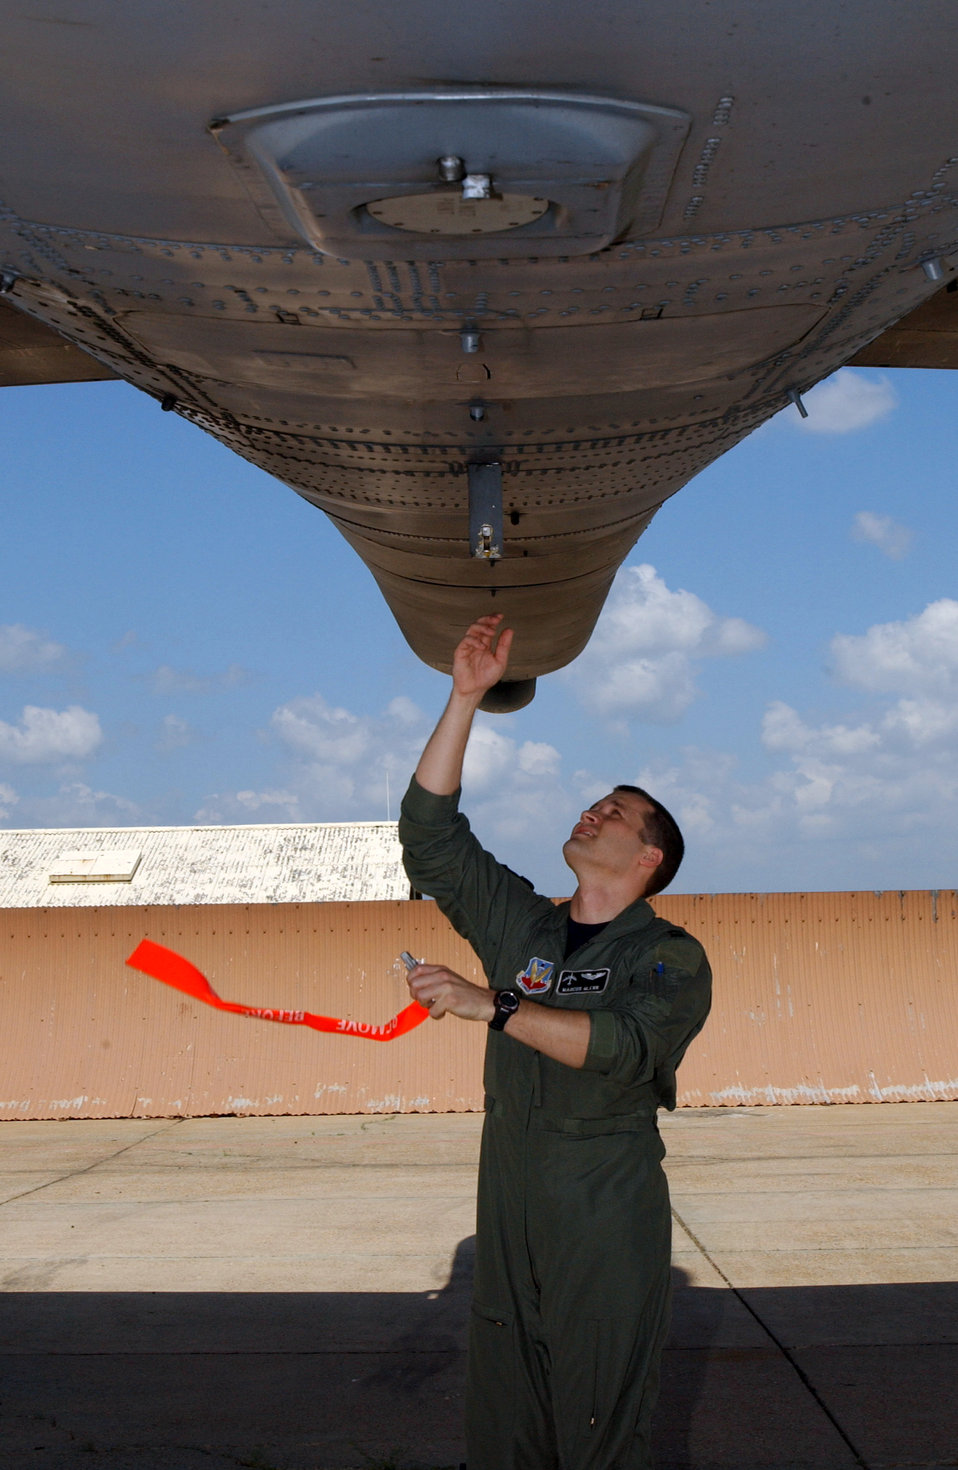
Mission ready

BARKSDALE AIR FORCE BASE, La. -- Capt. Marcus Glenn removes a safety pin from the flare door of a B-52 Stratofortress before a training mission from here May 20. Captain Glenn is a B-52 electronic warfare officer assigned to the 340th Weapons School.